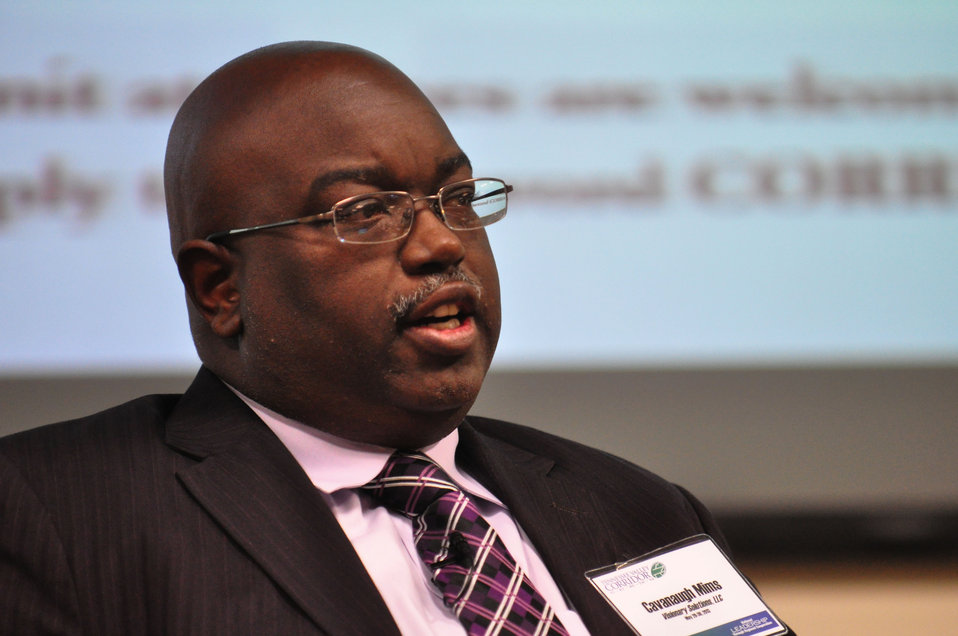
Cavanaugh Mims Visionary Solutions Tennessee Valley Corridor Summit Oak Ridge

13-062 DOE photo Lynn Freeny 5-29-2013 Oak Ridge Tennessee